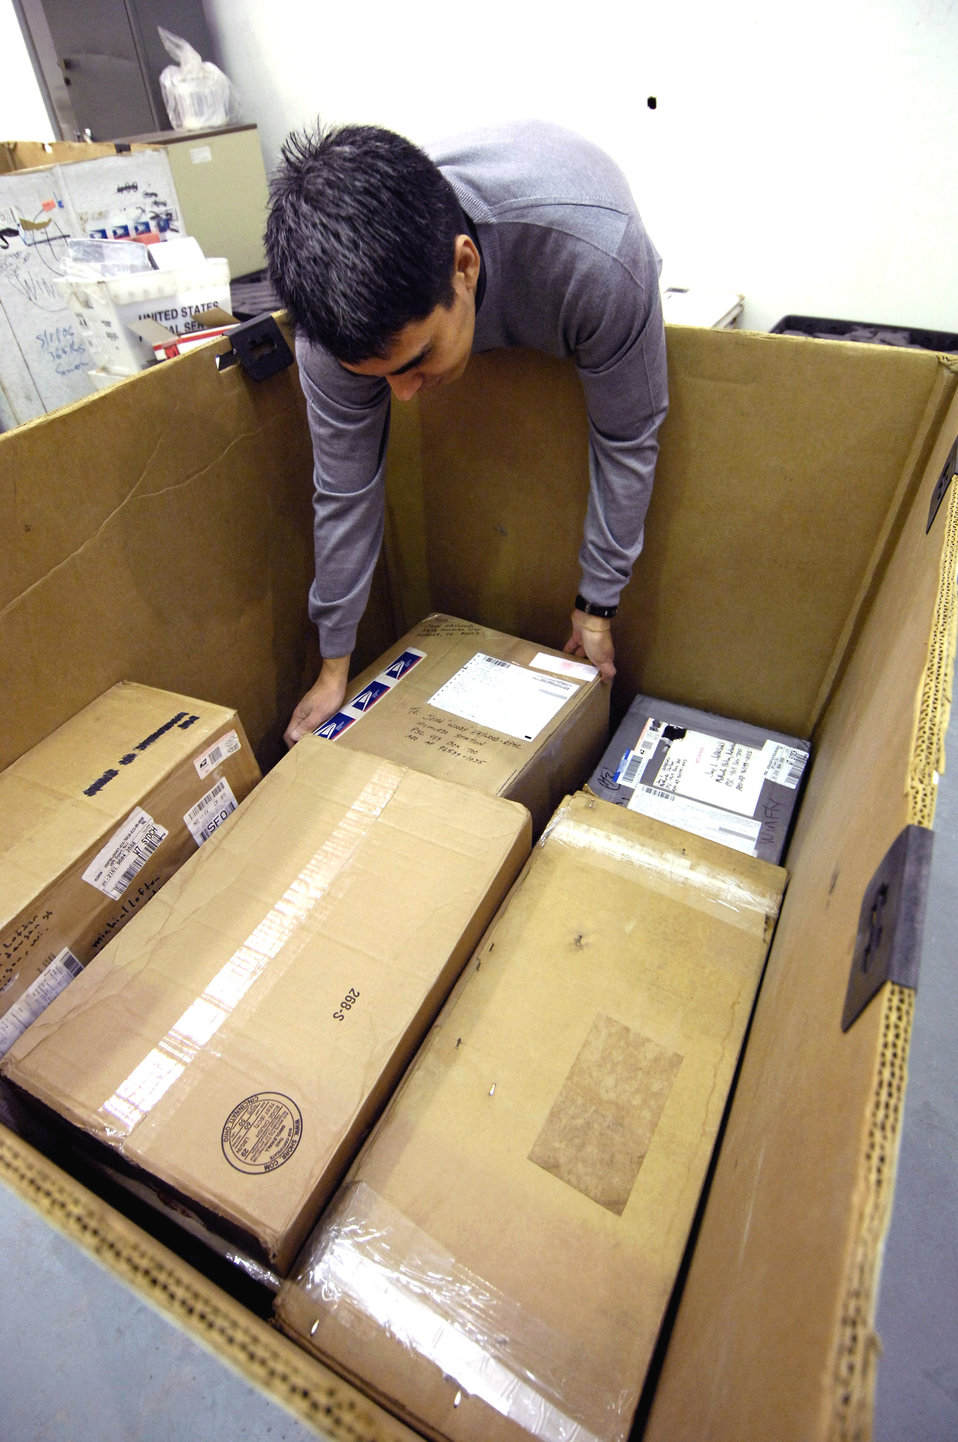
Neither snow nor deep freeze keep mail from Antarctica

Master Sgt. Al Coe loads mail into a container for Operation Deep Freeze Aug. 23 at Christchurch, New Zealand. Det. 4 of the Pacific Air Forces Air Postal Squadron processes all mail coming in and out of Antarctica and can handle up to 240,000 pounds of mail during Operation Deep Freeze. Sergeant Coe is the postmaster for Det. 4.